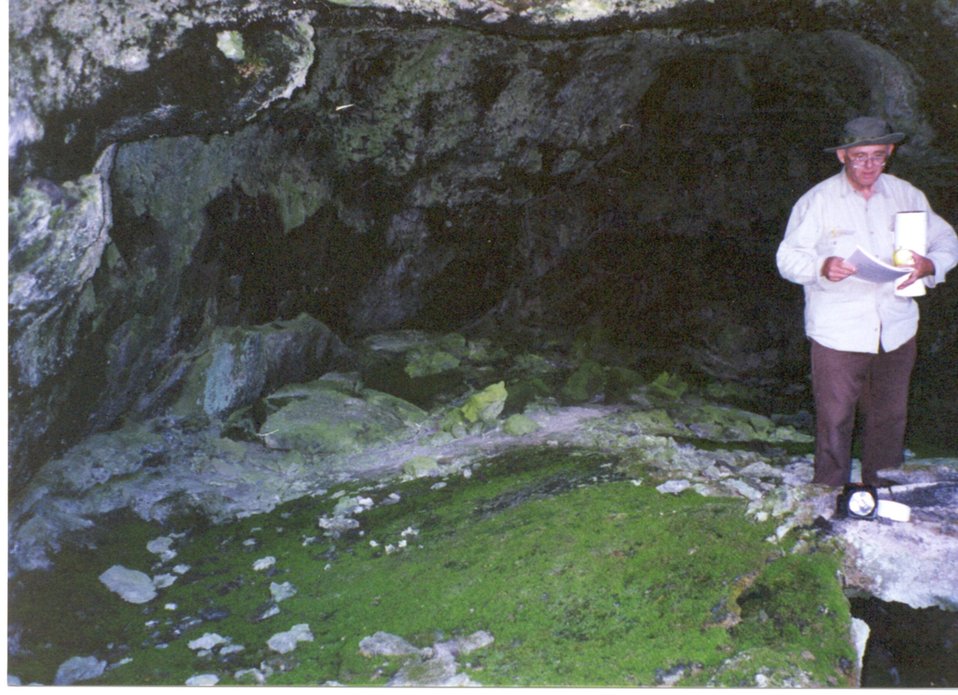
Moss Cave Entrance Craters of the Moon Shoshone Field Office USRD Upper Snake River District